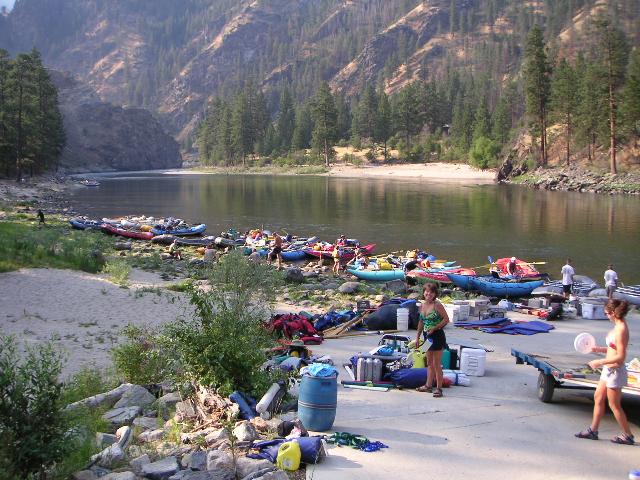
Camping Main Salmon

Floating the Main Salmon River on the Salmon-Challis National Forest in Idaho is a great way to spend your camping vacation. The main launch site for the river is at Corn Creek and can become crowded with commercial outfitters, private floaters and jet boaters. When recreation areas become crowded, extra caution is needed. Remember, you are responsible for the safety of yourself and for those around you.